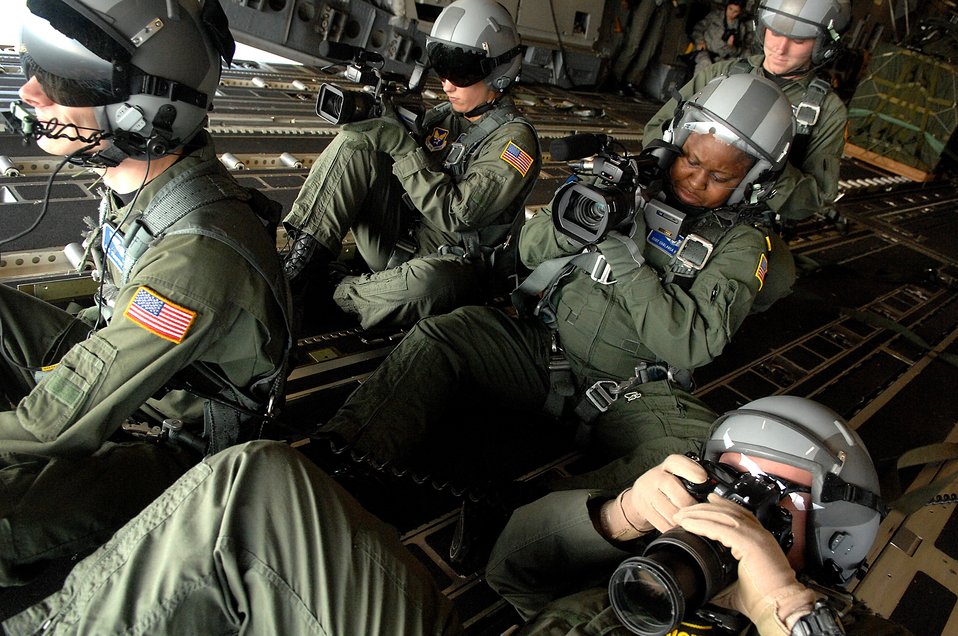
Show of force

Airmen from the 1st Combat Camera Squadron photograph C-17 Globemaster IIIs from the 437th and 315th airlift wings flying in formation during a strategic brigade airdrop exercise involving a 13-ship formation Dec. 18 from Charleston Air Force Base, S.C. C-17s must be able to meet the Army's goal of airdropping a brigade's worth of troops and equipment (about 3,250 Soldiers and 3,450 tons of equipment). The Airmen of the 1st CCS are assigned to Charleston AFB.